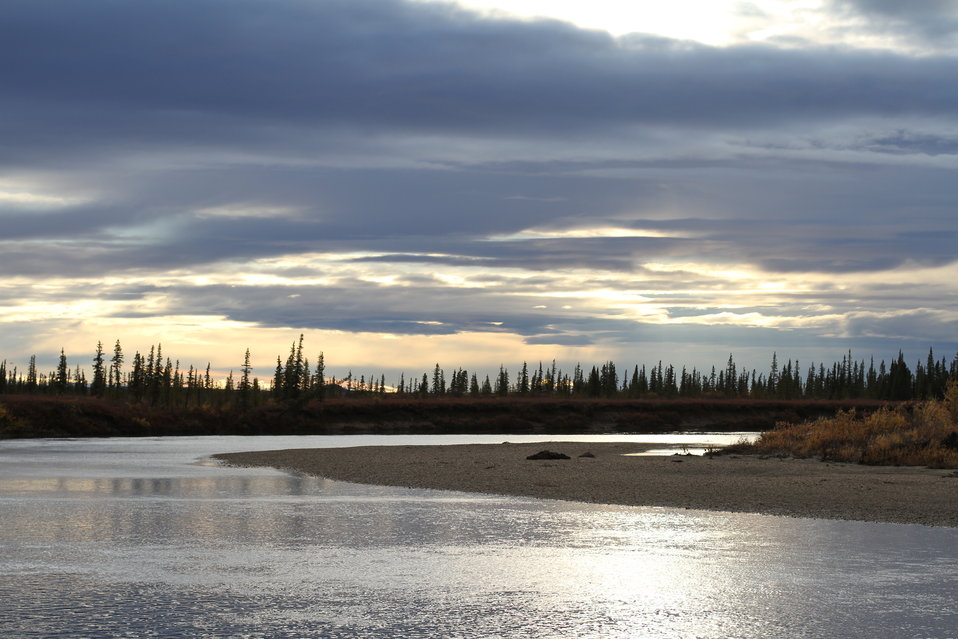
Selawik River, Alaska

The Selawik River (home to sheefish, Arctic grayling, longnose suckers, and other native fishes) originates in Alaska's Purcell Mountains and runs through the Selawik National Wildlife Refuge. After flowing into Selawik Lake, it empties into Kotzebue sound/the Chukchi Sea. USFWS / Katrina Mueller